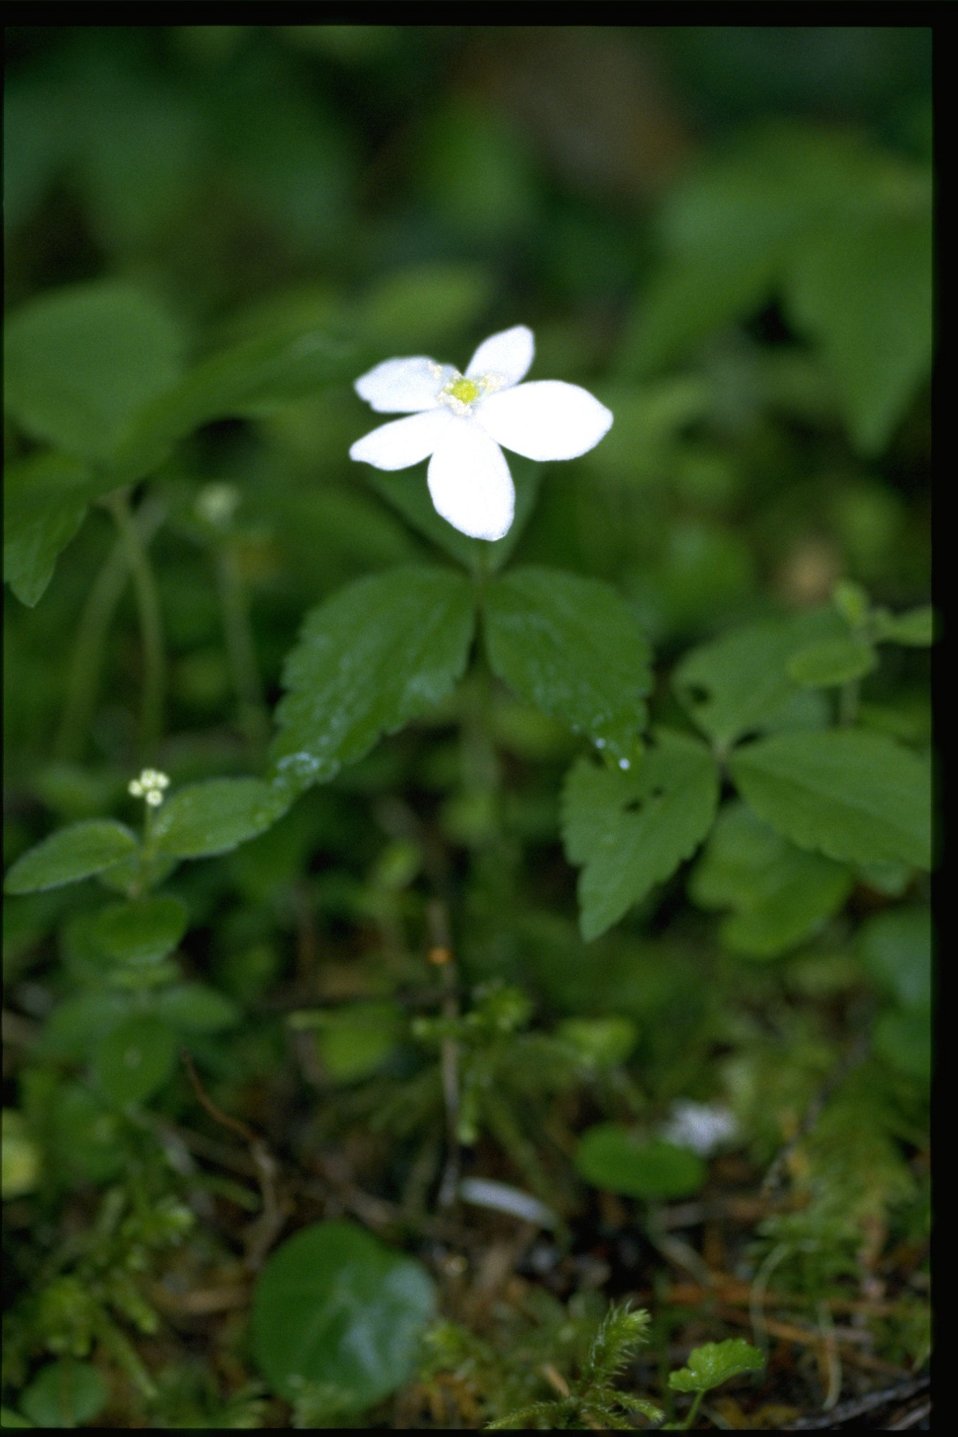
Medium shot of Anemone deltoidea.